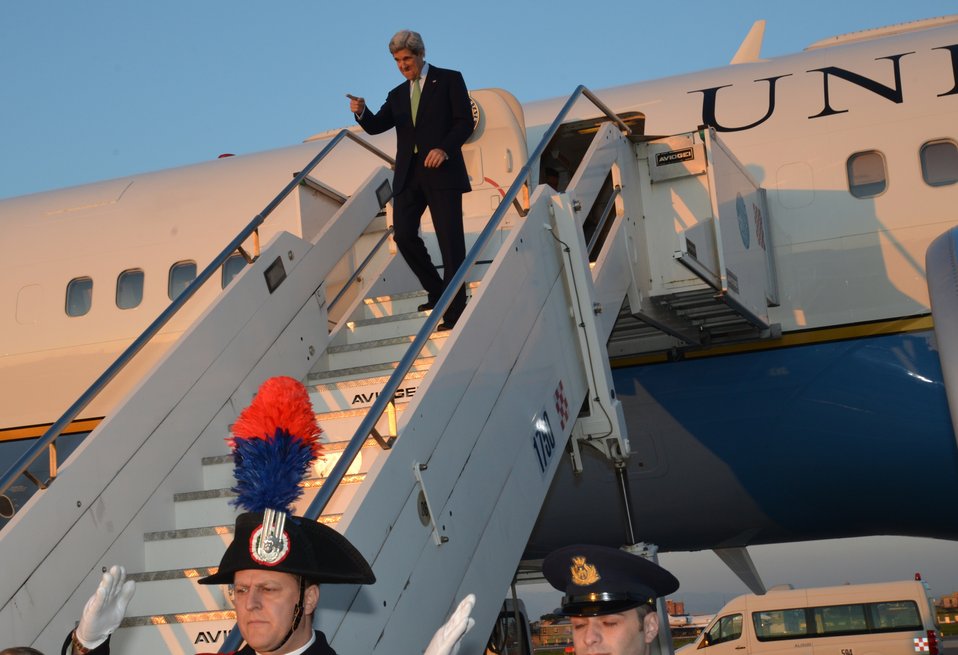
Secretary Kerry Arrives in Rome

U.S. Secretary of State John Kerry spots his former brother-in-law and now U.S. Ambassador to Italy David Thorne on the tarmac upon landing at Ciampino Airport outside of Rome, Italy, on February 27, 2013.